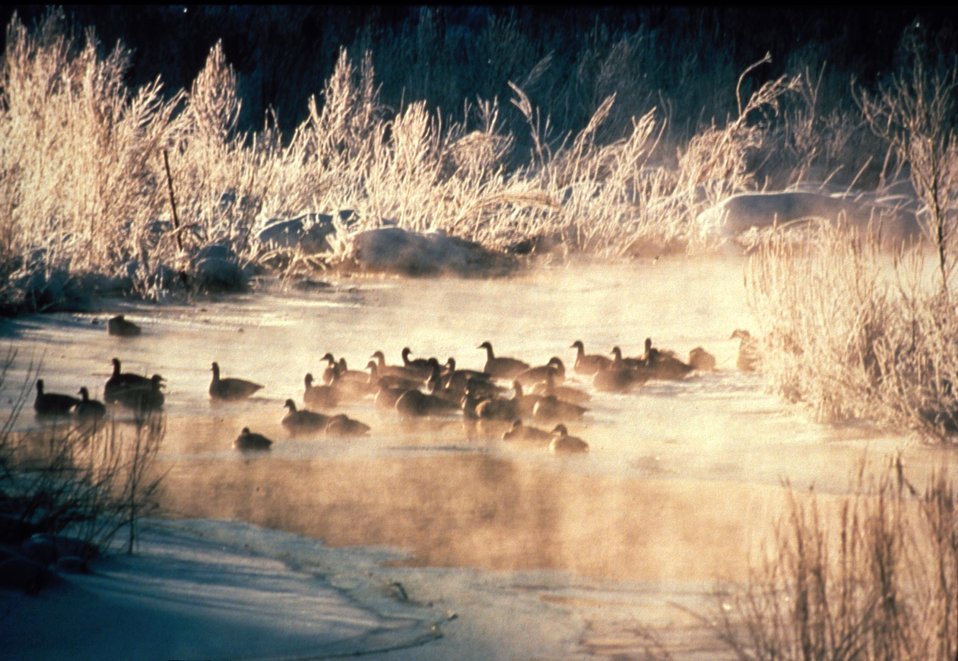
Photo of the Week - American black ducks in winter

Photo of the Week - 12/1/09.

American black ducks in the winter at Great Meadows National Wildlife Refuge (MA).